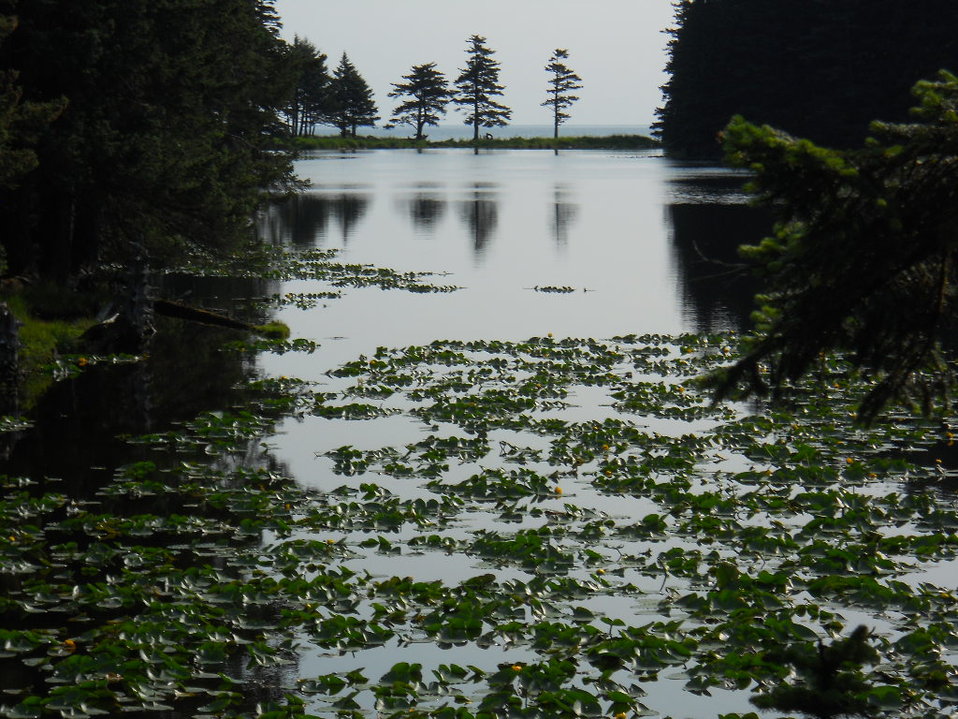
Peaceful Pond

Credit: USFWS
Photo taken by a Salmon Camp participant during a nature photography activity.

Source and Contact: Kodiak National Wildlife Refuge